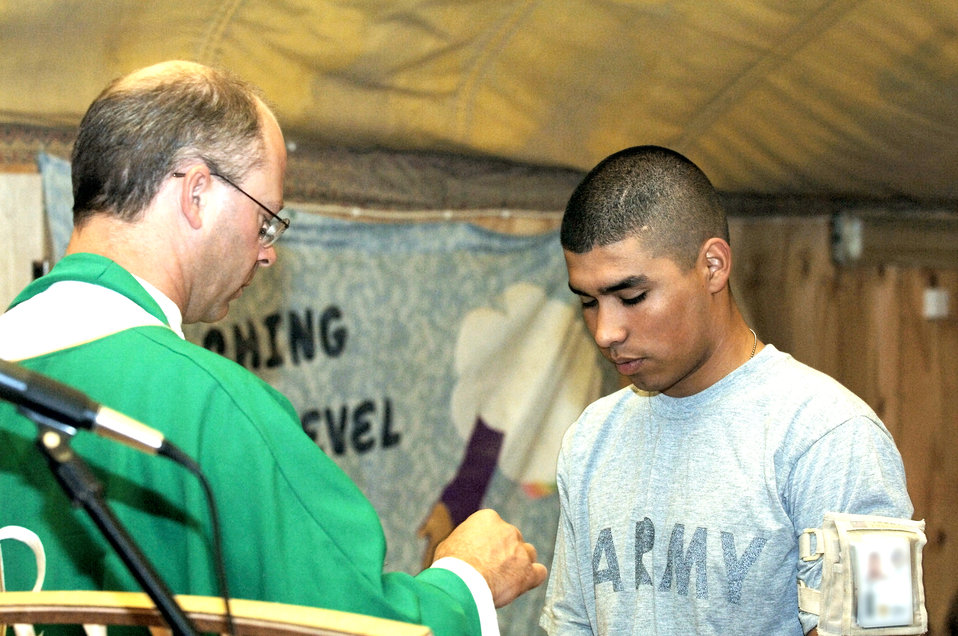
Chaplain serves Airmen, Soldiers at remote posts

CAMP CEDAR, Iraq -- Chaplain (Capt.) Chad Zielinski conducts the Eucharist with a Soldier here. Chaplain Zielinski holds 10 masses weekly here, at nearby Ali Base and Scania. He is the 407th Air Expeditionary Group Catholic chaplain at Ali Base.